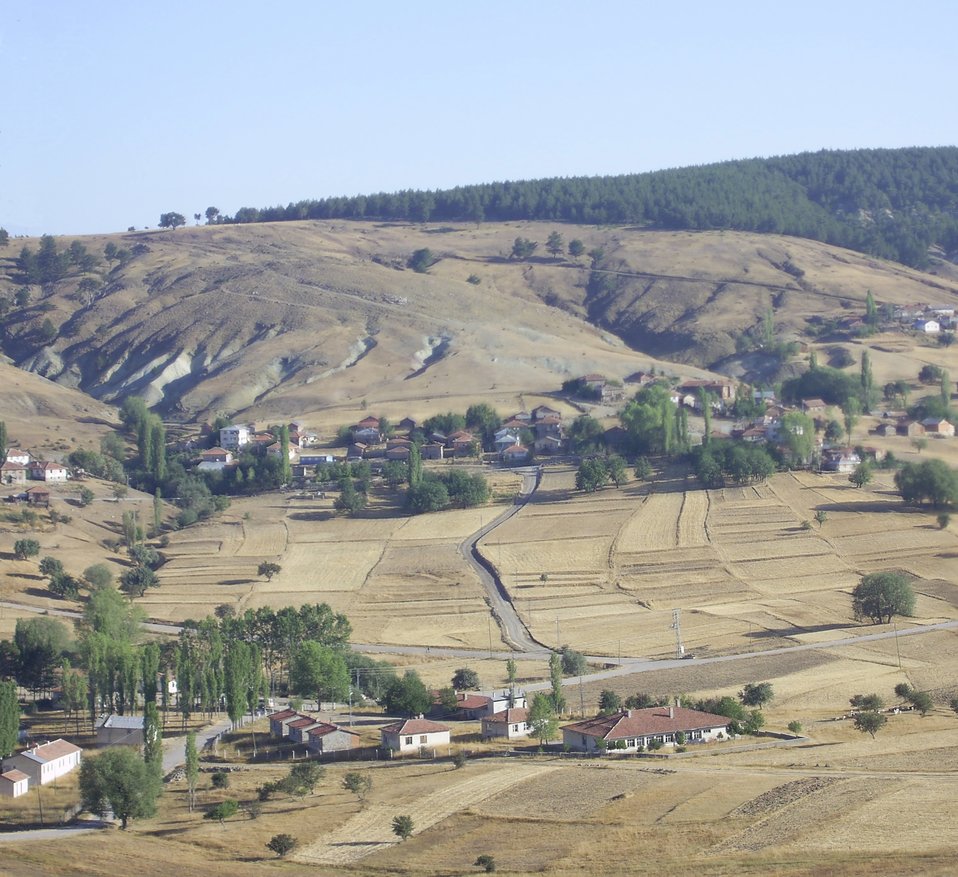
Türkçe: Kilkuyu, Tosya , Kastamonu